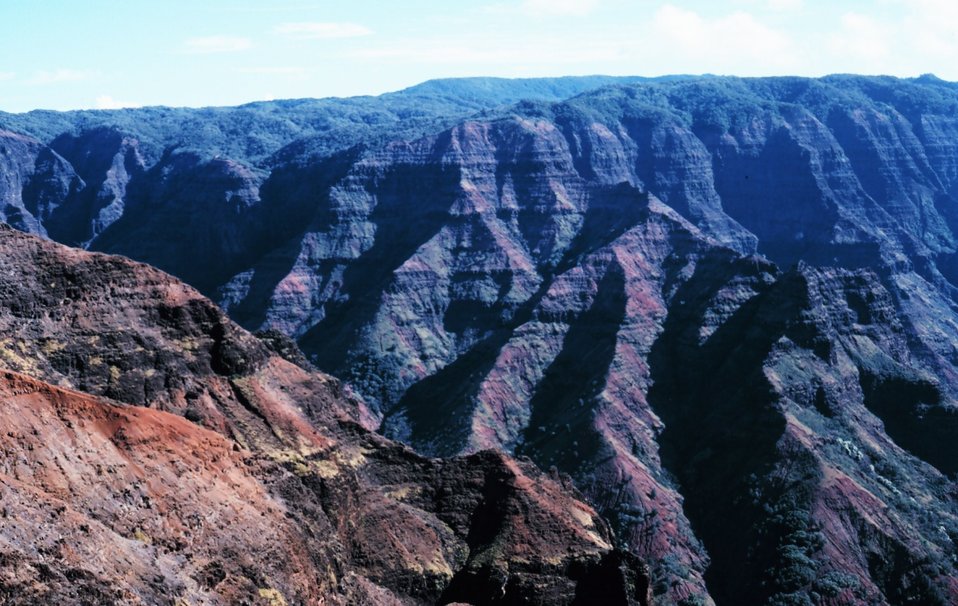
Waimea Canyon - the Grand Canyon of the Pacific